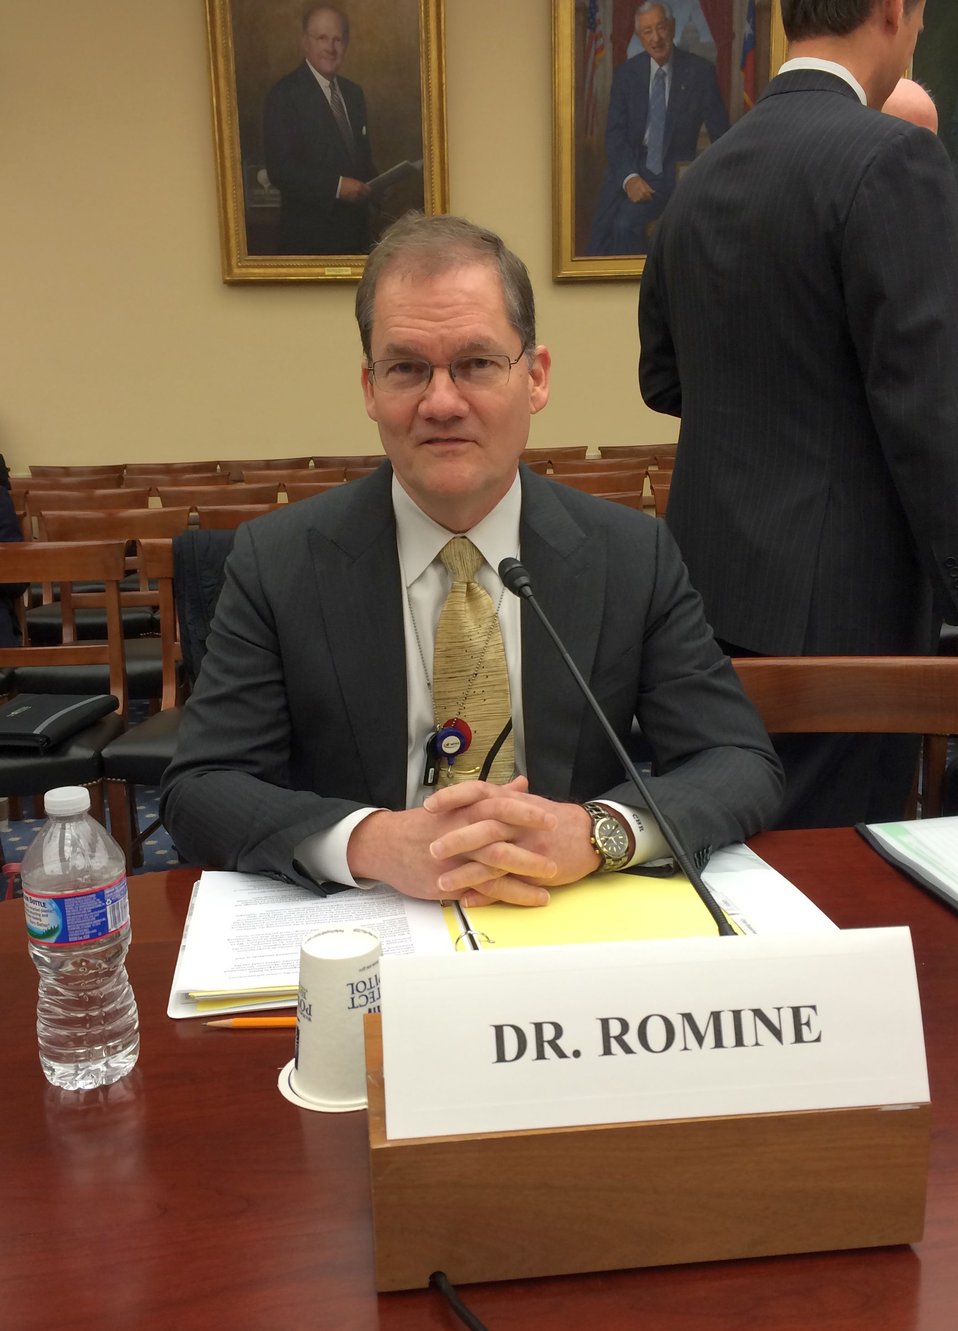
Dr. Romine Testifies Before Congress

Dr. Charles Romine (center), Director of the NIST Information Technology Laboratory prepares to testify before a joint House of Representatives Science Committee Hearing held by the Subcommittee on Oversight, and the Subcommittee on Research and Technology. The Hearing was entitled “Can Technology Protect Americans from International Cybercriminals?”.